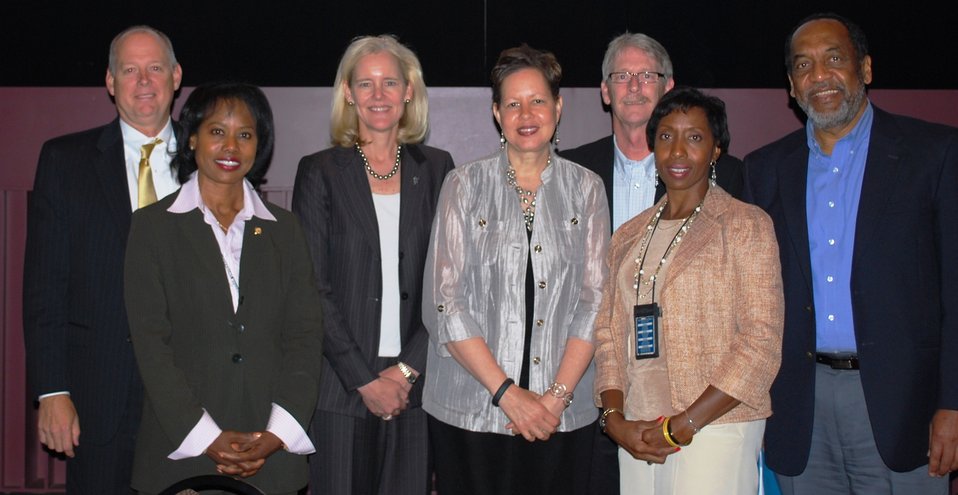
EECBG Diversity and Inclusion Town Hall

On June 6, 2012, the Department held a Diversity and Inclusion Town Hall at our Ohio site.